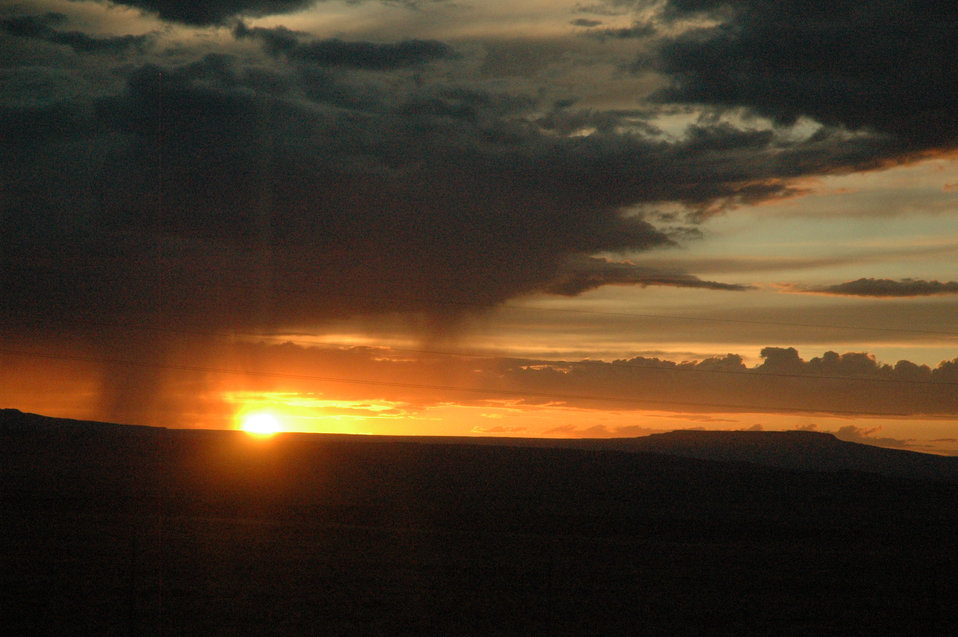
Rain clouds pass by as the sun sets in Chinle, Arizona on September 11, 2008.